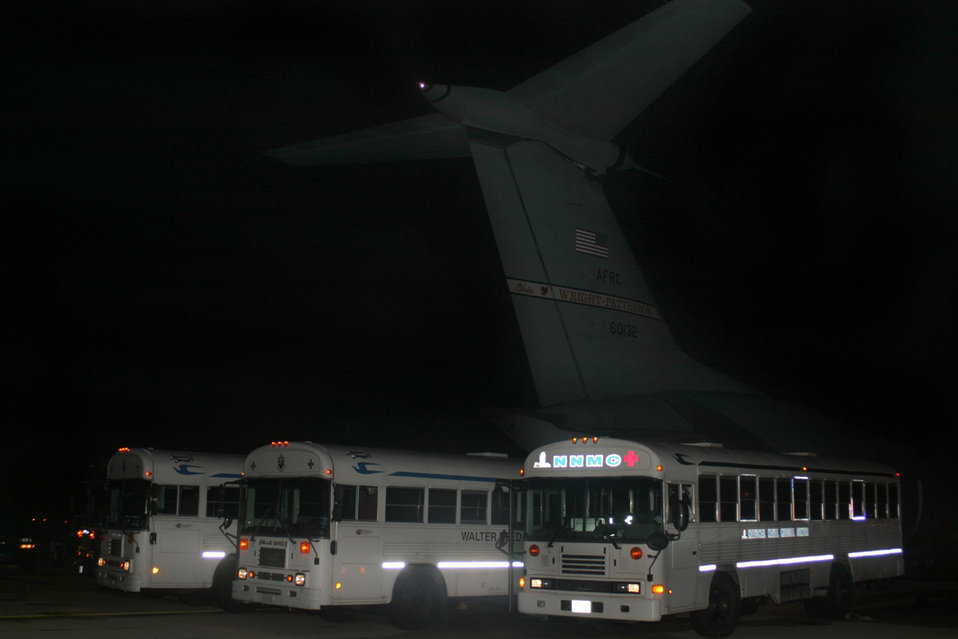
Team effort brings America's wounded troops home

ANDREWS AIR FORCE BASE, Md. -- Ambulance buses back up to an Air Force Reserve Command C-141 Starlifter ready to transfer patients who just arrived on the aircraft from Ramstein Air Base, Germany.